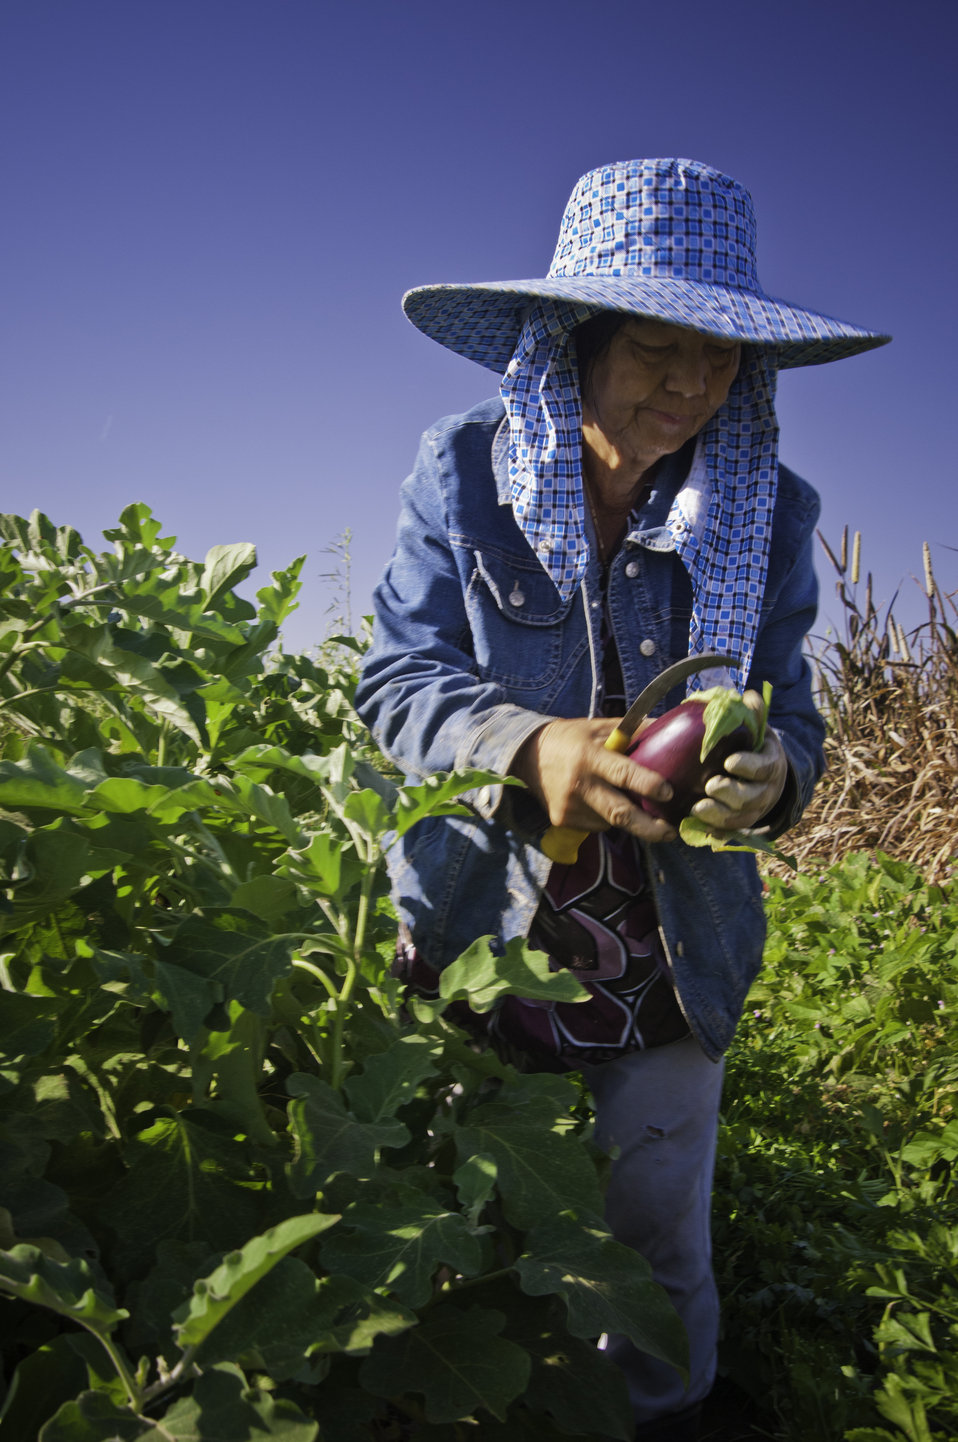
May Young Vu a Moung farmer harvesting eggplant on her farm May's Flower's in Sanger, California on Thursday, August 29, 2013.